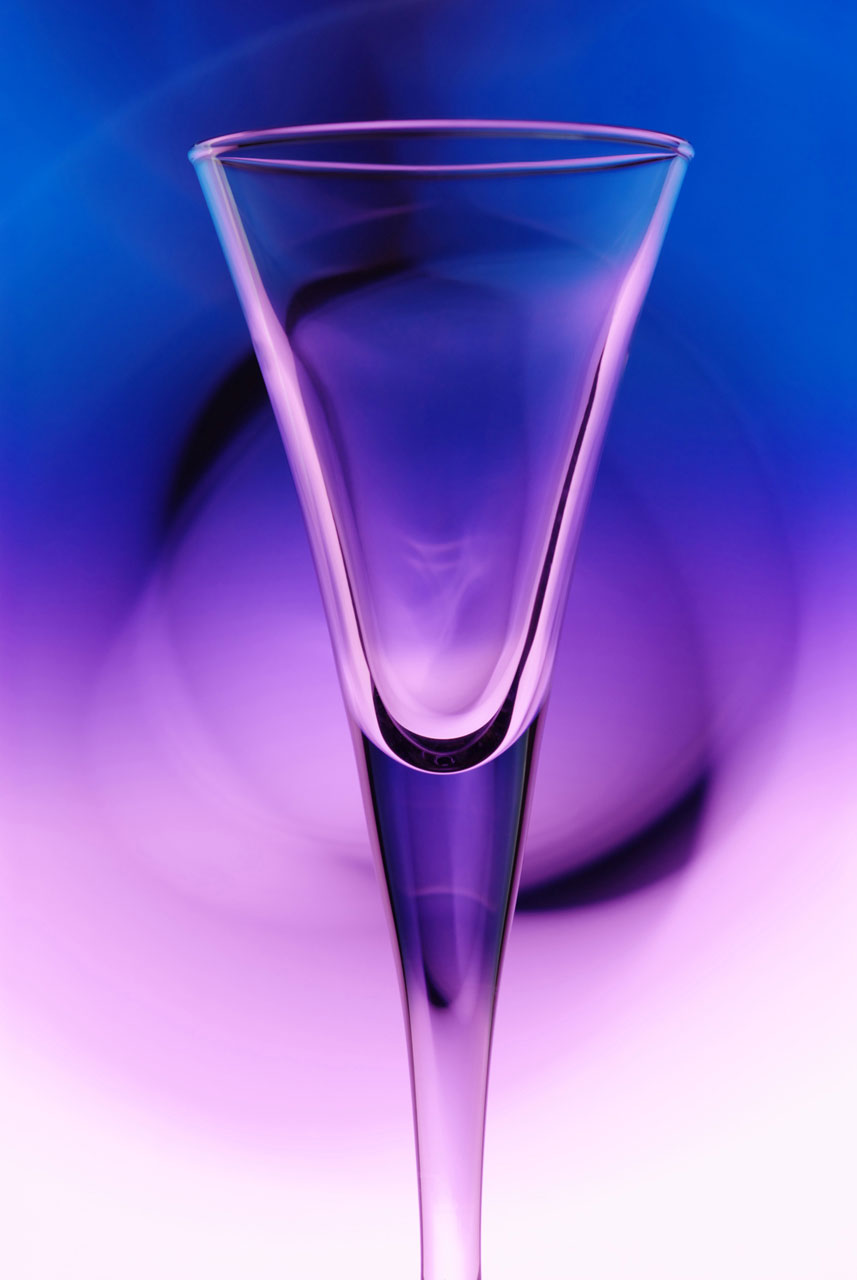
Liquid blur.